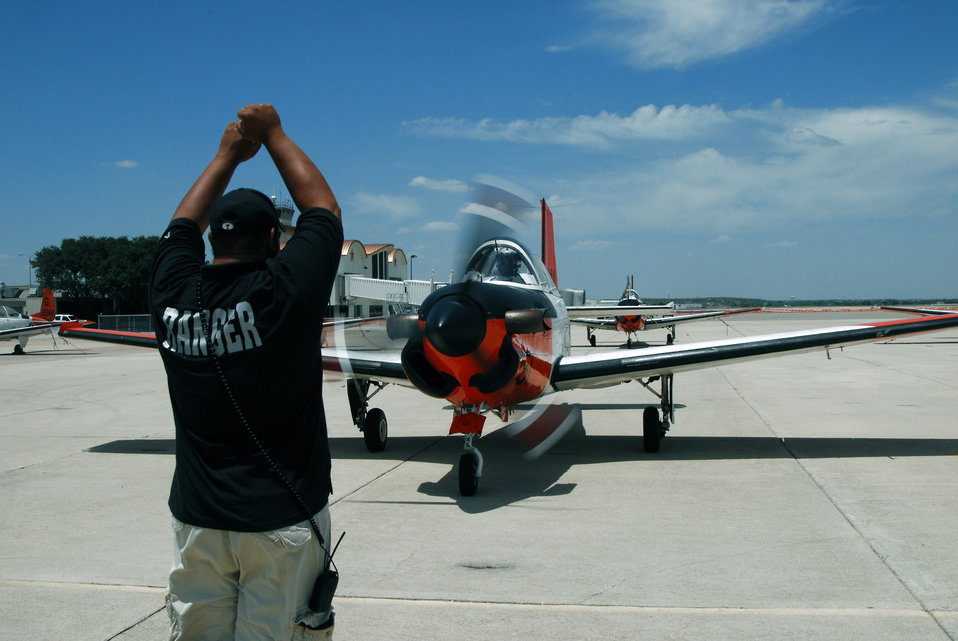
Airmen ready for Dolly's aftermath

An employee of Ranger Aviation brings a Navy T-34 trainer aircraft to a full stop July 22 at Mathis Field Airport in San Angelo, Texas. Twenty-three aircraft were sent from Corpus Christi Naval Air Station to Mathis Field, their designated inland airport, to escape potential damage from Hurricane Dolly.